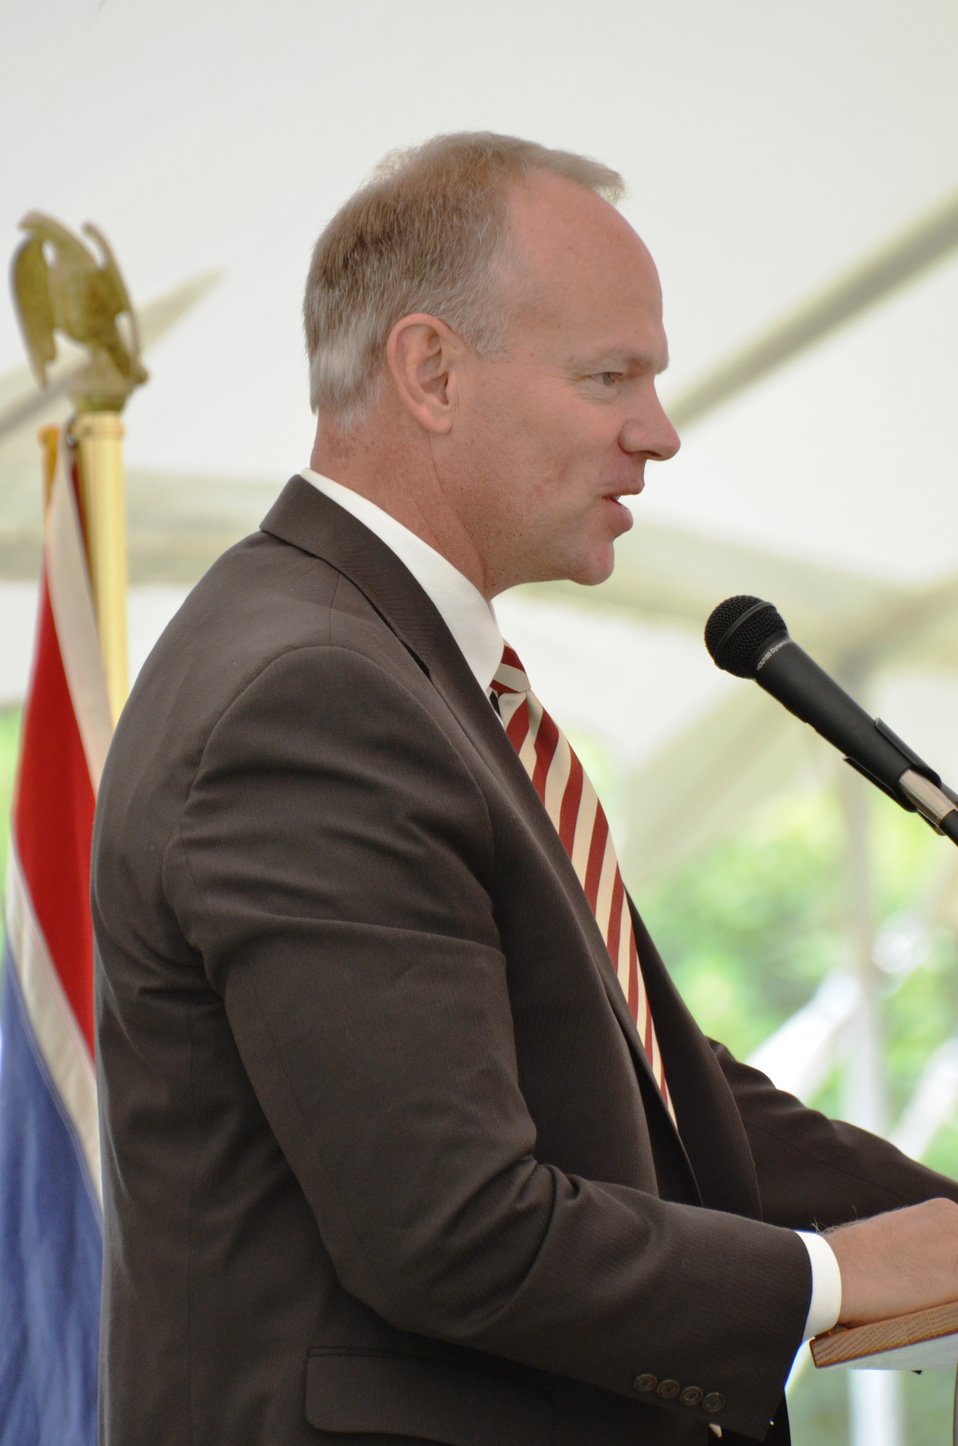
Governor Mead Addresses the Crowd

Wyoming Governor Matt Mead addressed the audience at the National Elk Refuge's centennial ceremony on August 10. Mead grew up in Jackson and reminisced about how he spent time on the National Elk Refuge as a youth.

Credit: USFWS / Bobby Harkey, National Elk Refuge volunteer